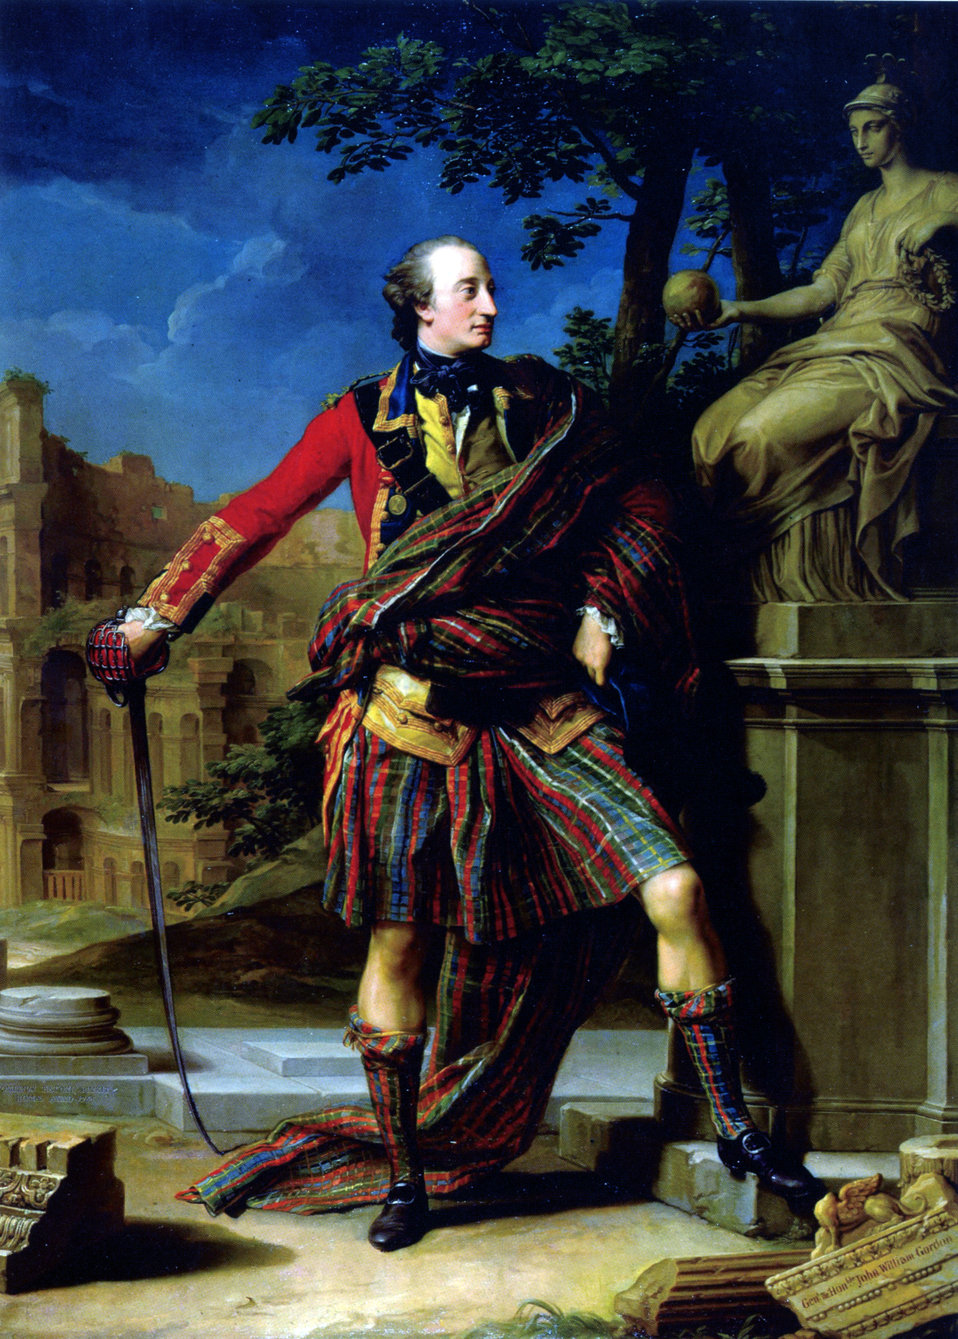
William Gordon Batoni